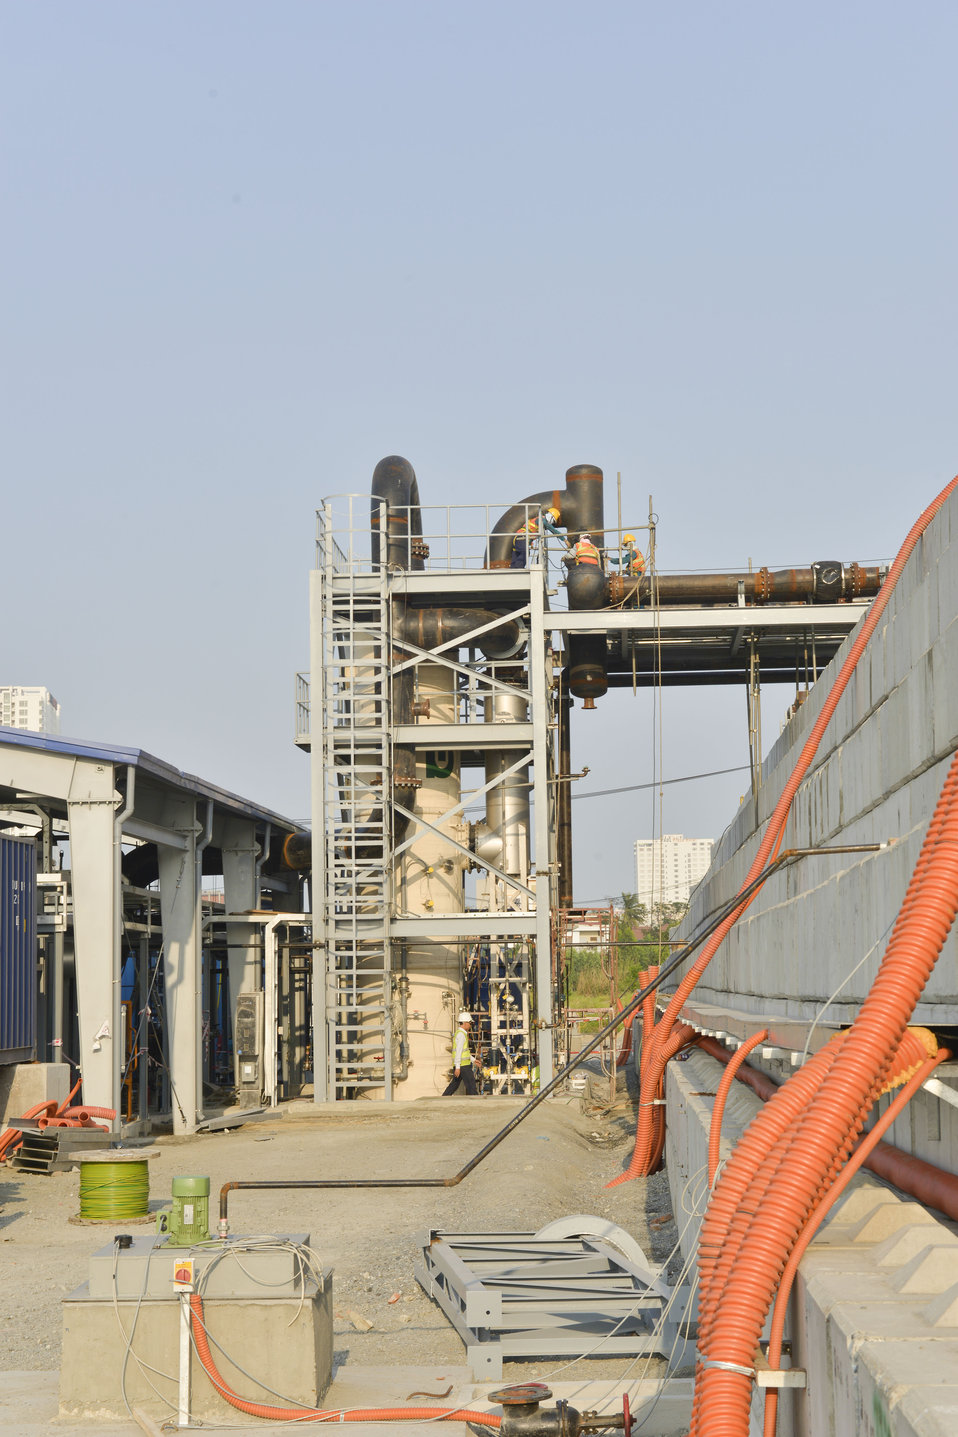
The liquid and vapor treatment plant/system constructucted north of the containment structure.

March 24, 2014.